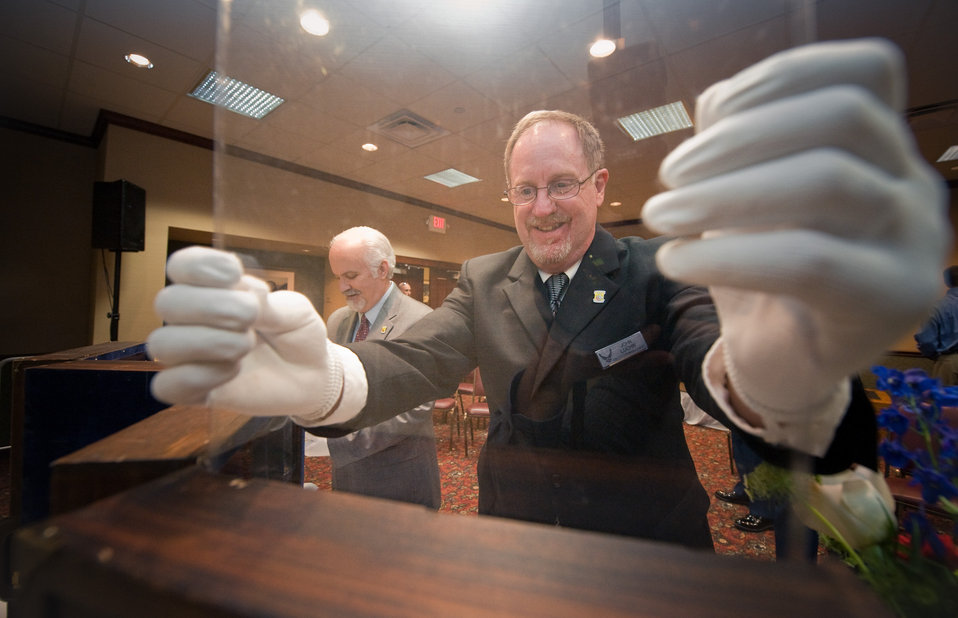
Doolittle Tokyo Raiders' Goblet Ceremony

Robert Adair (grey suit) and John Luchin (black suit), carefully replace the clear display panels of the Doolittle Raiders' case of goblets after being used in a ceremony in Fairborn, Ohio on April 6, 2010. Adair is a conservator and Luchin is a collections registrar with the National Museum of the U.S. Air Force who keeps, care and transports the goblets for the Doolittle Raiders. The rarley seen goblets were last opened for a ceremony in 2008.